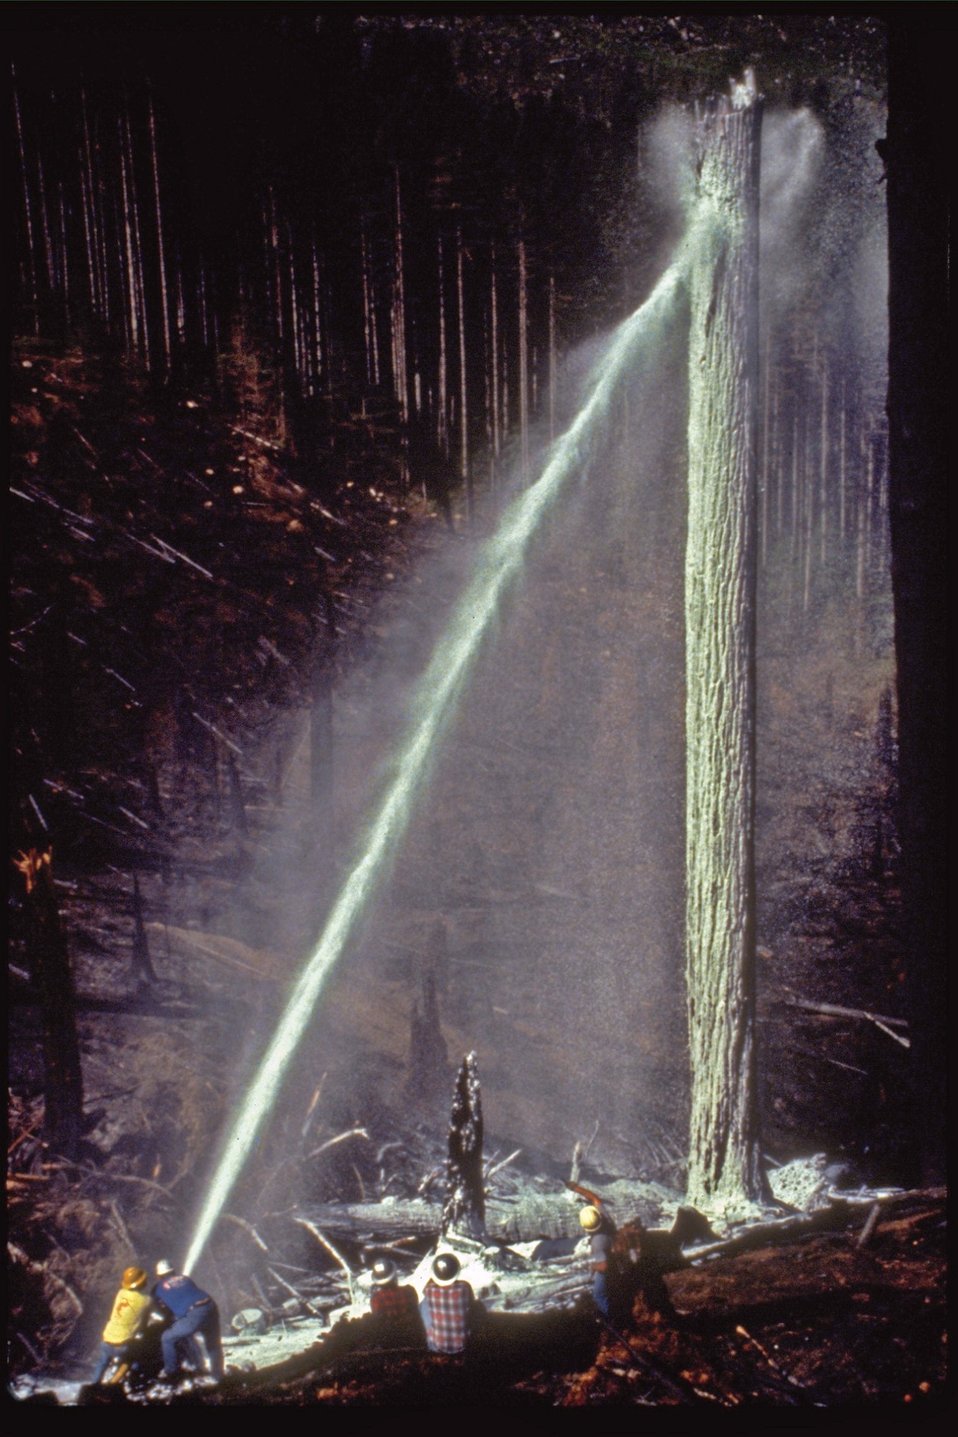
Fire foaming a burning snag.